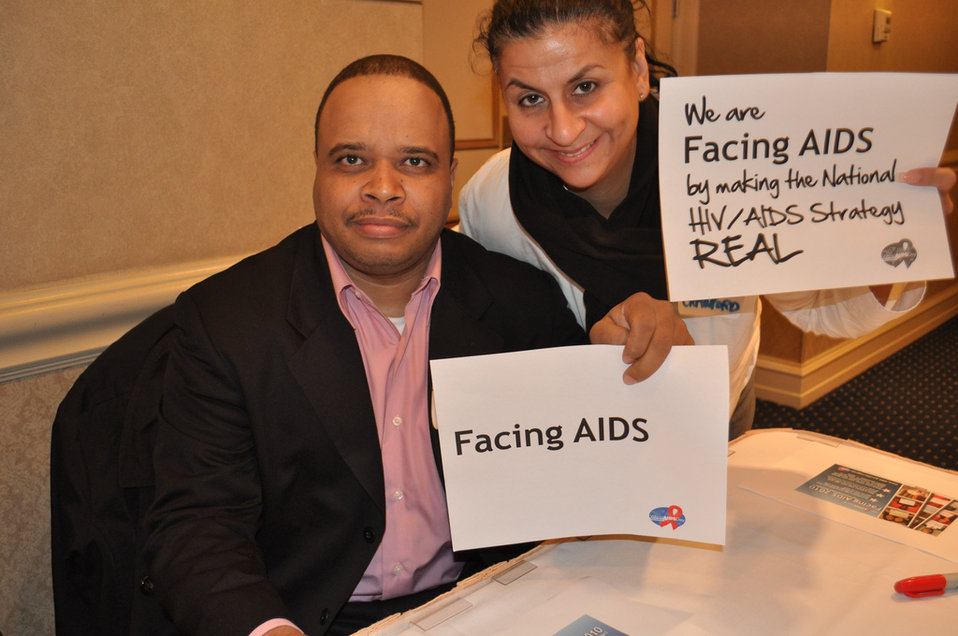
We are Facing AIDS through NHAS-08